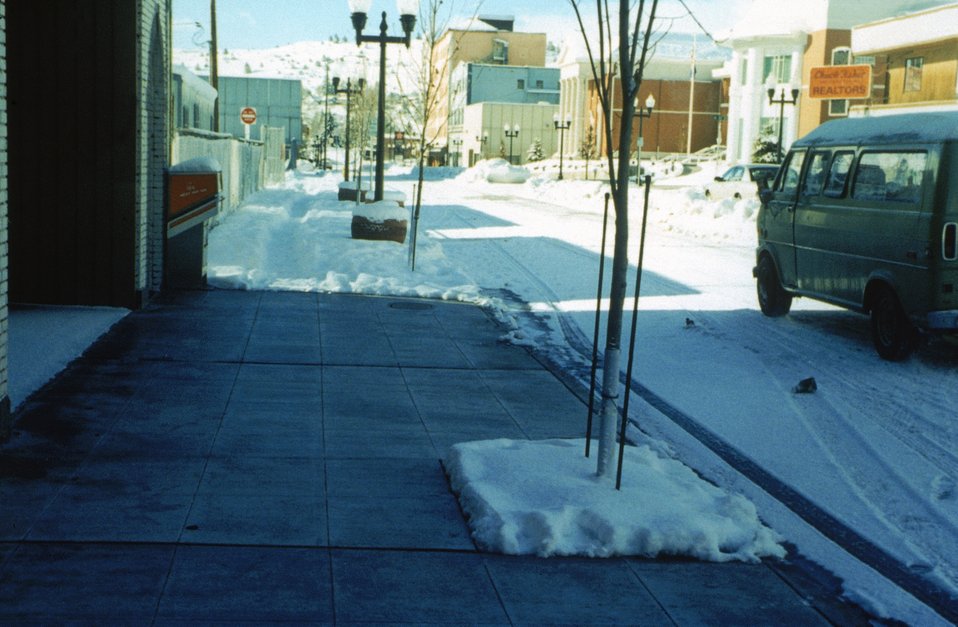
IN KLAMATH FALLS, OREGON, A DISTRICT HEATING SYSTEM MELTS SNOW ON SIDEWALKS DRY AFTER A SNOWFALL, UNLIKE THE SIDEWALK BEYOND, WHICH IS NOT HEATED BY THE SYSTEM.

A GEOTHERMAL DISTRICT HEATING SYSTEM KEEPS THE SIDEWALKS CLEAR AND DRY AFTER A SNOWFALL. THE DISTRICT HEATING SYSTEM MELTS SNOW ON MORE THAN 50,000 SQUARE FEET OF SIDEWALKS AND CROSSWALKS. SNOWMELT TUBING IN SLURRY WAS INSTALLED UNDER THE SIDEWALKS IN 1995 AS PART OF THE CITY'S DISTRICT HEATING SYSTEM, WHICH WAS CONSTRUCTED IN 1981 TO HEAT 14 GOVERNMENT BUILDINGS. THE SYSTEM HAS NOW EXPANDED TO INCLUDE NON-GOVERNMENT BUILDINGS.